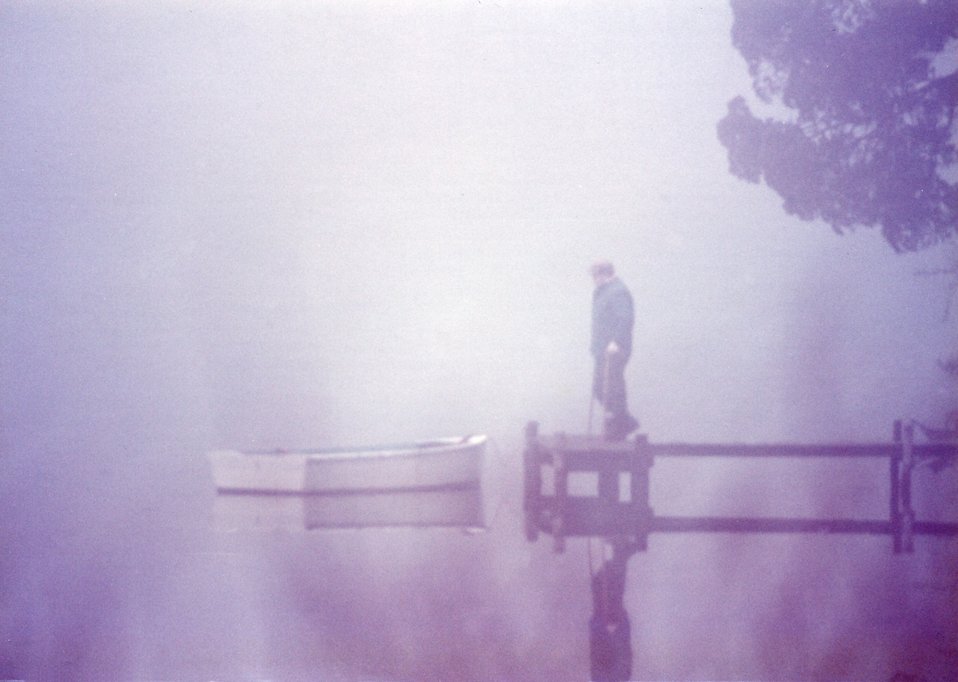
Fisherman checking his boat on a foggy morning.